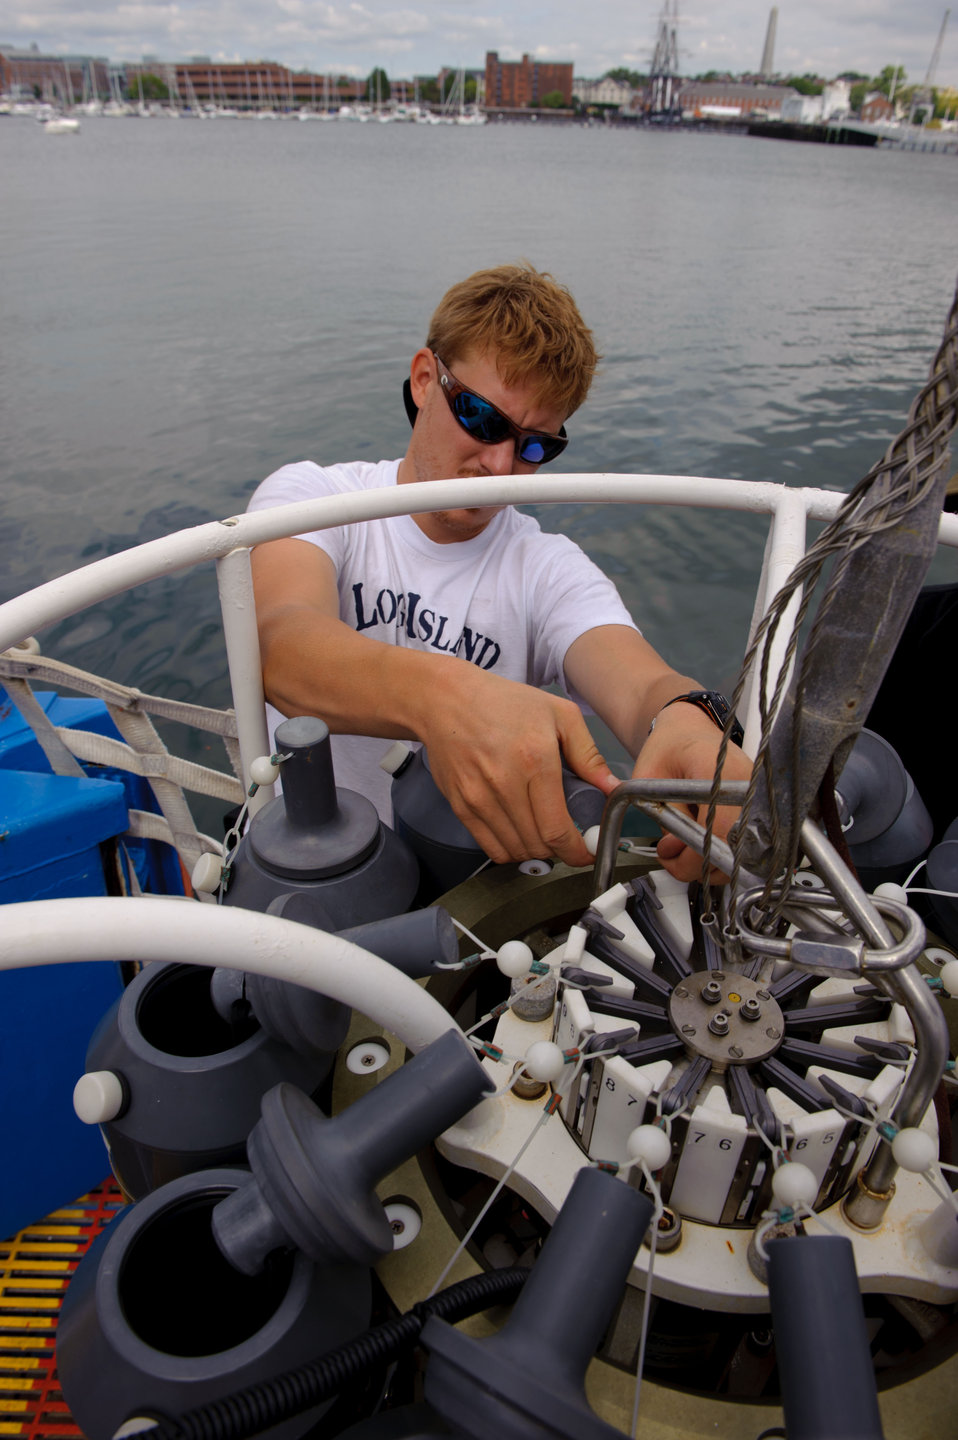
August 5, 2011 Bold Tech sets up the rosette water sampler